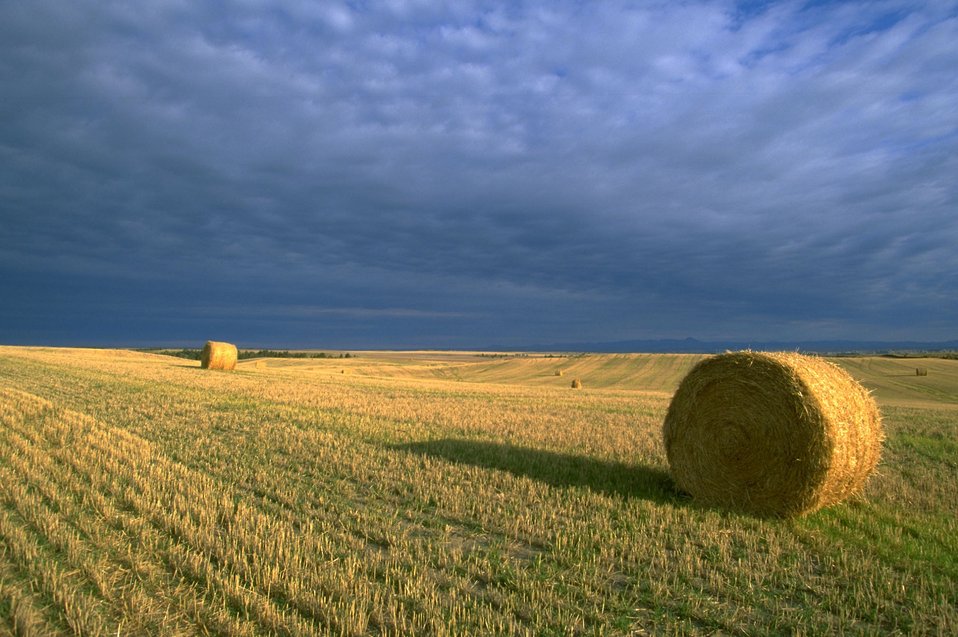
Farmland adjacent to the Upper Missouri River Breaks National Monument